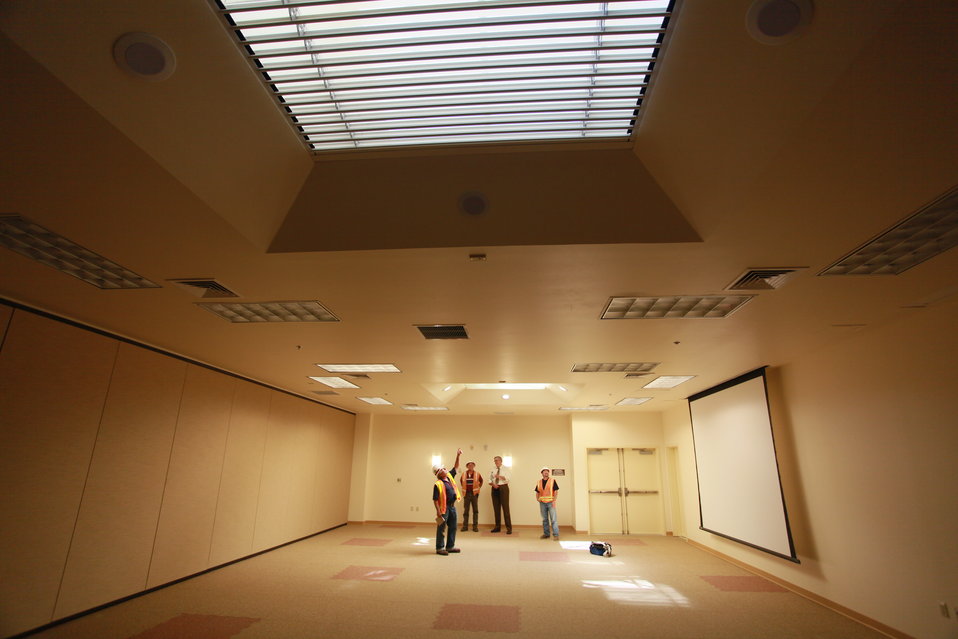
MONTEREY, Calif. (Sept. 21, 2010) - Rising above the hills of the Presidio of Monterey is the Defense Language Institute’s new general instruction building (GIB), completed in September by the U.S. Army Corps of Engineers Sacramento District.

The $28 million building will house 60 classrooms for military students learning foreign languages, the first of three scheduled for Corps construction to accommodate the growing DLI.